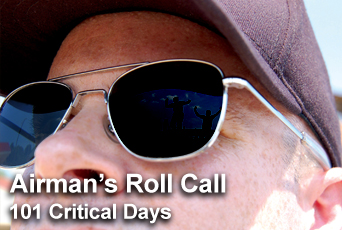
Airman's Roll Call: 101 Critical Days of Summer

The summer season is upon us, and brings with it sunny days, family vacations and barbecues with friends. Unfortunately, though, the season also brings increased risks and opportunities for reckless behavior from which none of us are immune. By focusing on safety, however, mishaps and fatalities can be avoided.